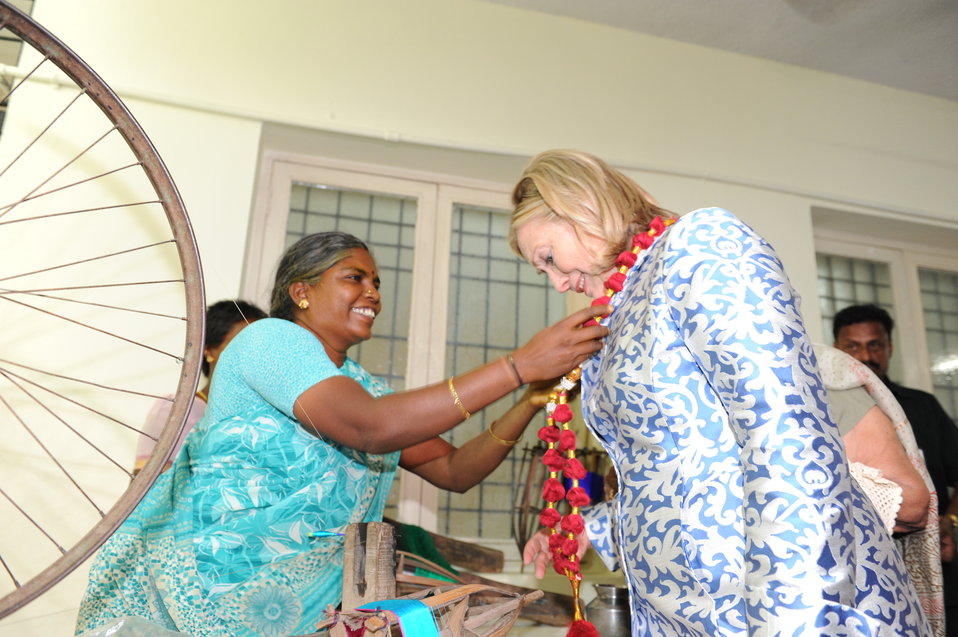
Secretary Clinton Receives an Honorary Garland

U.S. Secretary of State Hillary Rodham Clinton receives an honorary garland from one of the vendors at the World Women’s Forum in Chennai, India, on July 20, 2011. [Paul Cohn/ State Department photo]